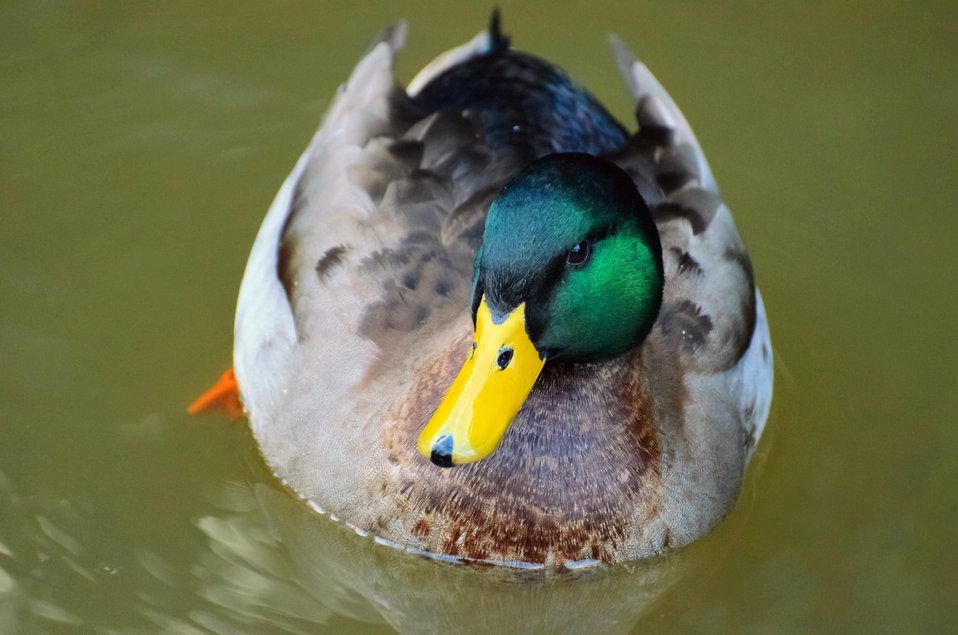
Mallard - anas platyrhynchos - male.